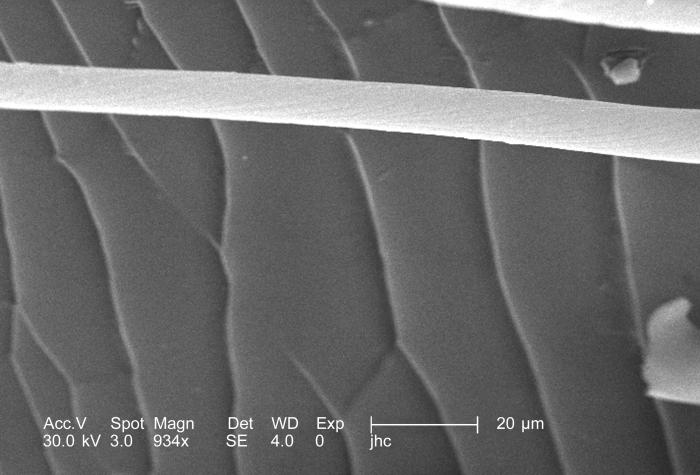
Under the moderately high magnification of 934x, this scanning electron micrograph (SEM) revealed some of the morphologic features encountered on the ventral surface of a male carpenter bee's, Xylocopa virginica, abdomen.